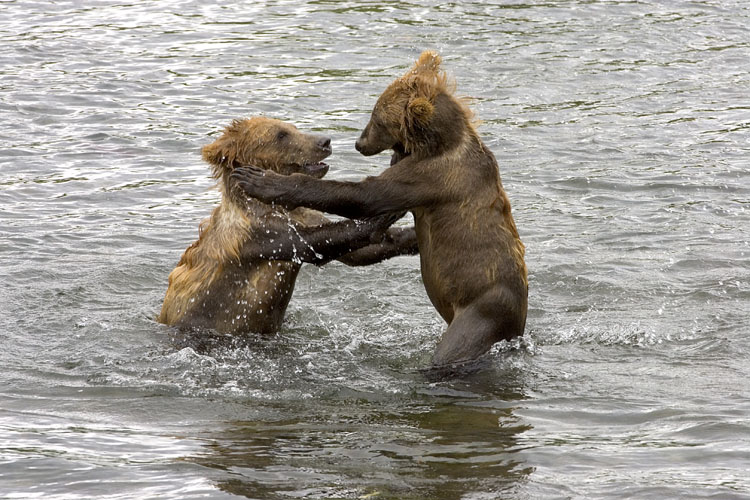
Kodiak Brown Bears

Playful Kodiak Bears